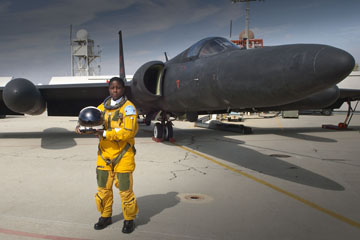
Lt. Col. Merryl Tendgesdal

Lt. Col. Merryl Tengesdal, first African-American female U-2 pilot